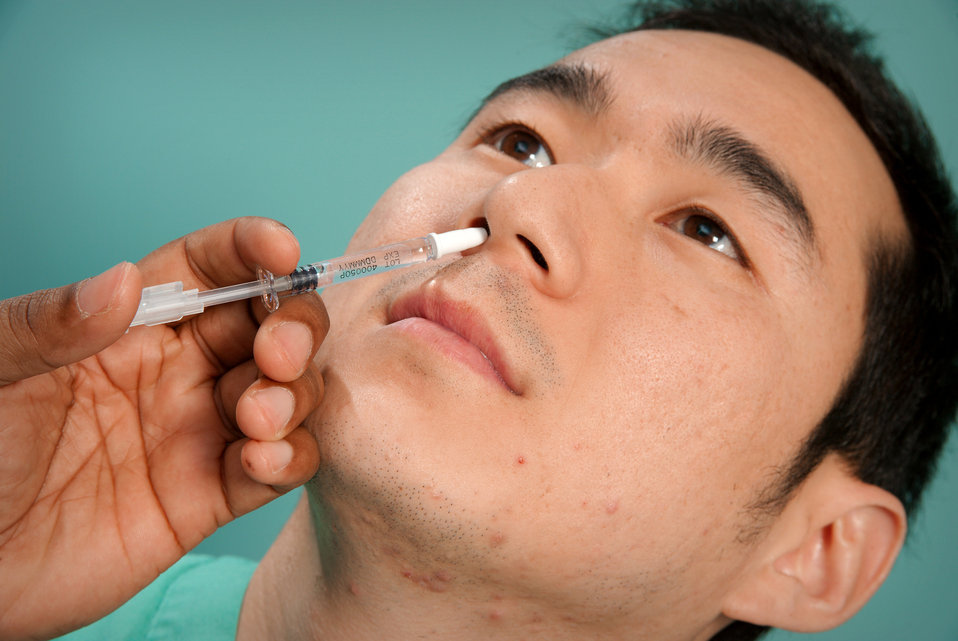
This 2009 image depicts a healthcare practitioner as he was administering the H1N1 live attenuated intranasal vaccine (LAIV) to an Asian man. Using a small syringe, he was delivering the vaccine mist into the man's right nostril.